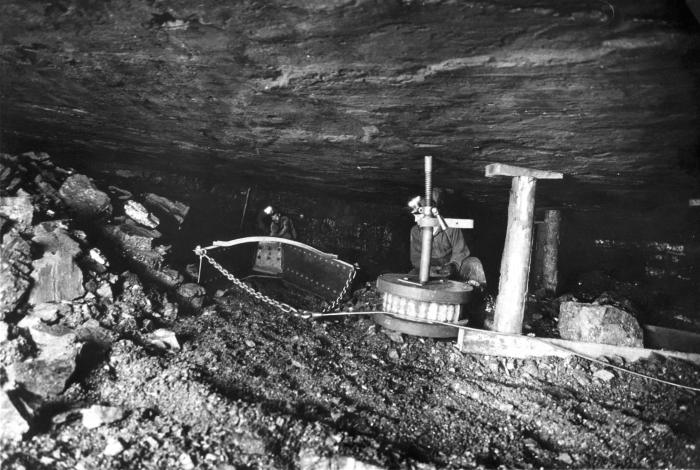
This historical image, which was provided by the Center for Disease Control's (CDC), National Institute for Occupational Safety and Health (NIOSH), depicted two coal miners in the process of setting up a 'scoop shovel' in a subterranean coal mine shaft. Note that neither of the two men was wearing a filtered breathing mask, goggles, or earplugs, which today, would have been required protective gear. Mining coal, especially under circumstances such as these close quarters, facilitated coal dust inhalation, thereby, predisposing miners to the long-term negative health effects of this profession such as 'black lung disease', or 'coal-workers' pneumoconiosis' (CWP). Today, the Federal government's stringent regulations on the level of coal dust permissible in the air of a coal mine, and the requisite use of filtered breathing devices, has dramatically lowered the number of cases of black lung disease.